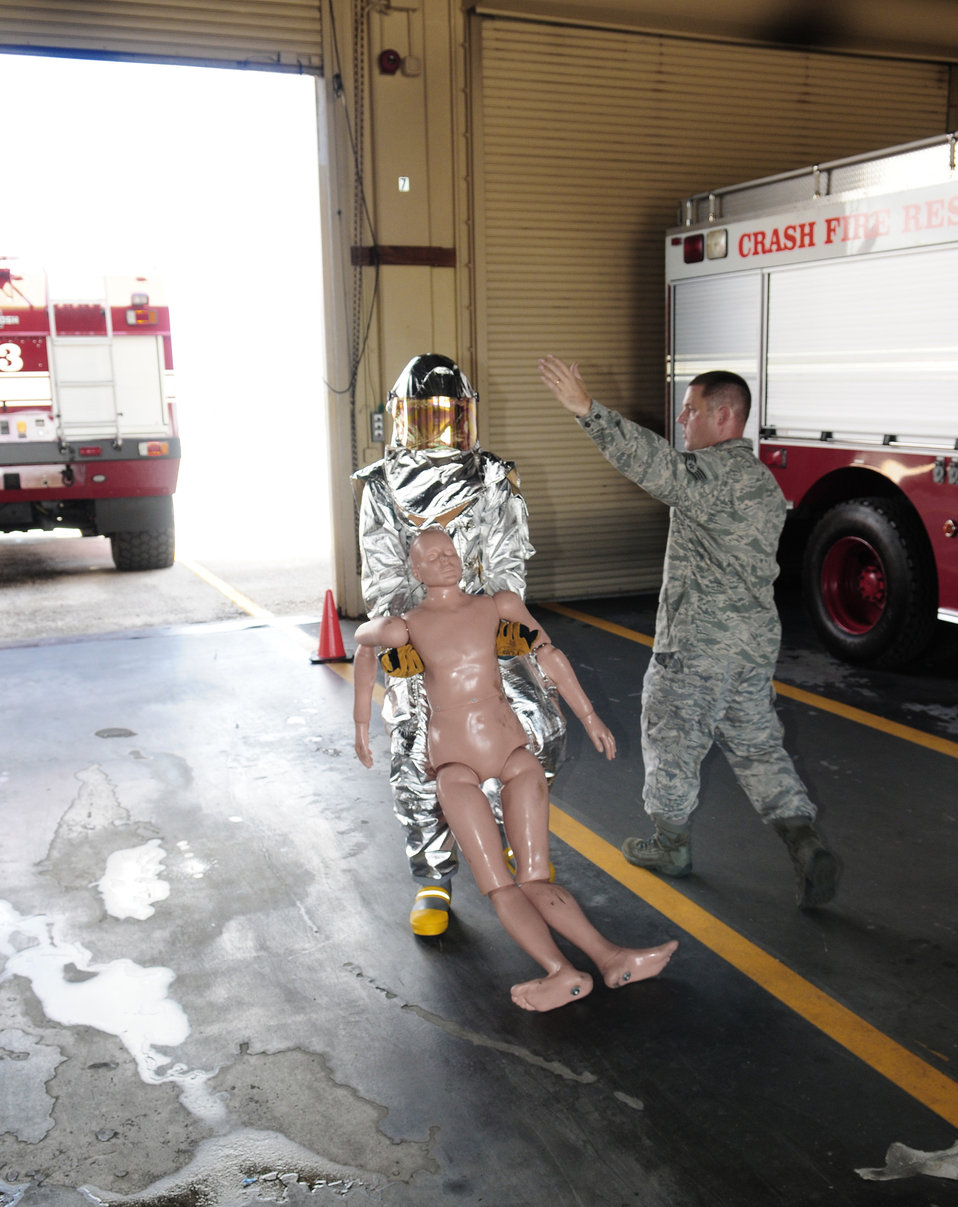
Academy cadets experience operational Air Force

A U.S. Air Force Academy cadet does a body drag as one section of nine in a firefighter physical training competition May 19 at Andersen Air Force Base, Guam. The fire house offered a unique perspective for the third-year cadets.